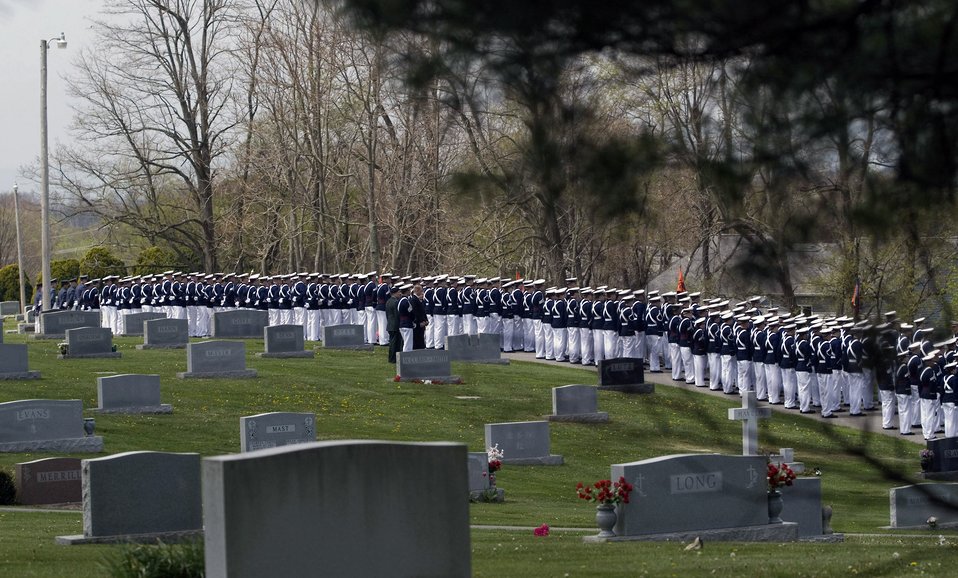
Virginia Tech corps of cadets pay honors to one of their own

The regiment of the Virginia Tech Corps of Cadets stands in formation along the hills of the cemetery in Blacksburg, Va., April 25. Cadet Matthew La Porte, a sophomore in Air Force ROTC Detachment 875 and the Virginia Tech Corps of Cadets, was one of the 32 students and faculty killed during the shooting incident at the school April 16.